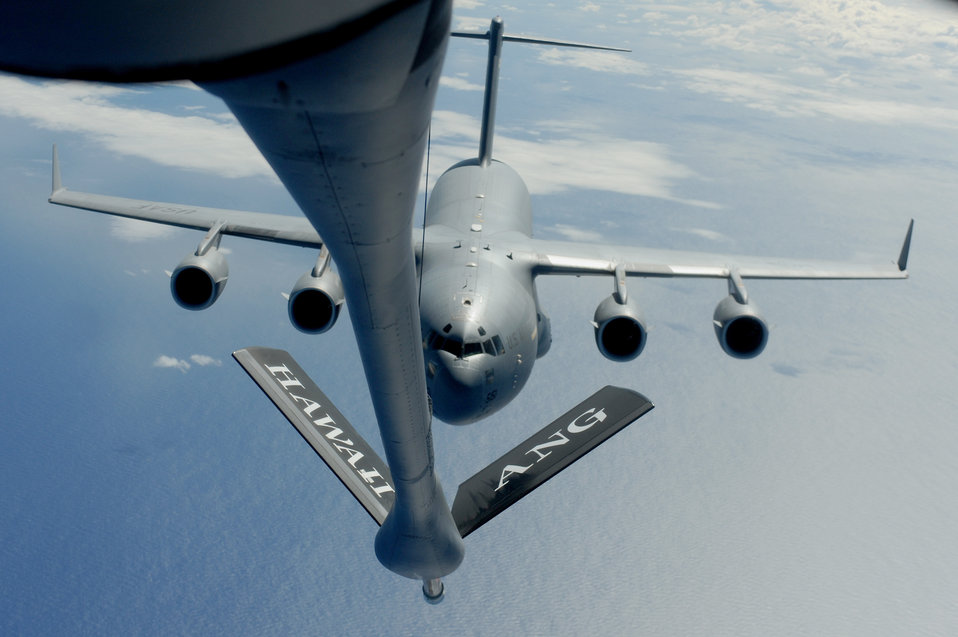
C-17 refuels over the Pacific

A KC-135 Stratotanker lowers the boom for a C-17 Globemaster III Sept. 18, 2010, over the Pacific Ocean during a Total Force partnership mission. The C-17 is assigned to the 15th Wing at Joint Base Pearl Harbor-Hickam, Hawaii, and the KC-135 is from a Hawaii Air National Guard's 204th Air Refueling Squadron.